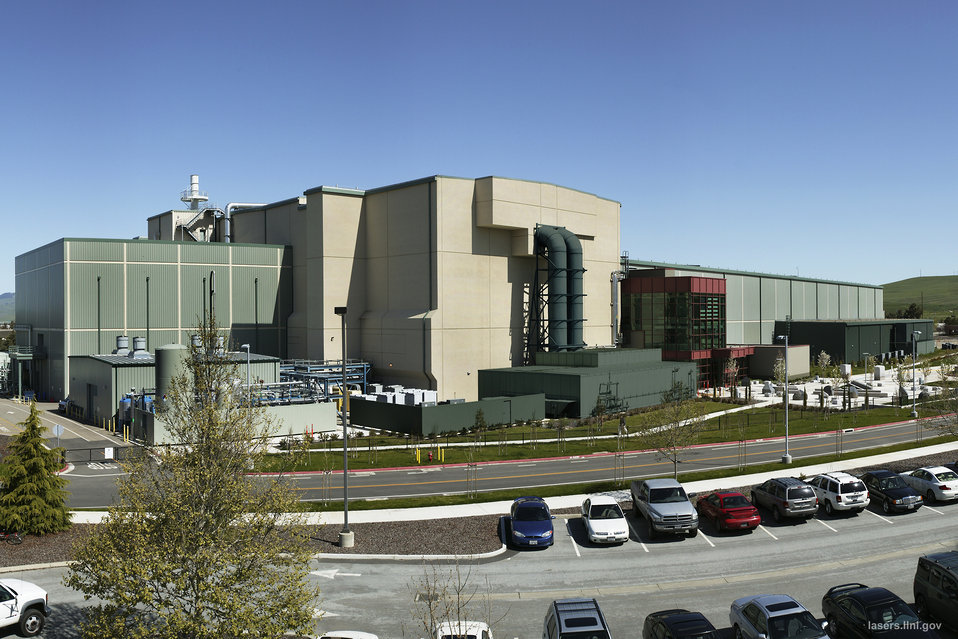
Construction of the National Ignition Facility was completed in March 2009 and the facility was dedicated on May 31, 2009.

The National Ignition Facility at LLNL enables key programs and technologies that support DOE's National Nuclear Security Administration Defense Programs and LLNL missions, ensuring that the national's weapons remain safe, secure and reliable. NIF, one of the cornerstones of DOE's stockpile stewardship program, will integrate the inertial confinement fusion program into the overall stockpile stewardship program and foster the development of associated laser technologies.